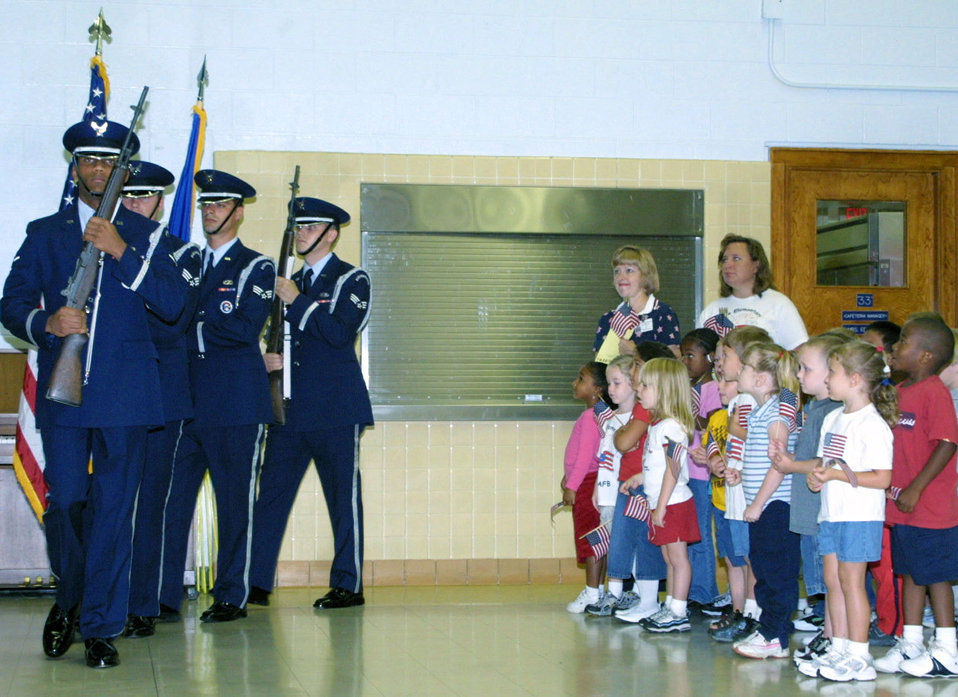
An awesome flag ceremony

POPE AIR FORCE BASE, N.C. -- Members of the base honor guard join Pope Elementary School students during a special flag ceremony in the school cafeteria Sept. 7. The annual ceremony is part of the school's tradition to honor men and women who serve in the U. S. military. During the ceremony, Col. Frank Kisner, 43rd Airlift Wing commander, spoke to the students about the importance of the flag.